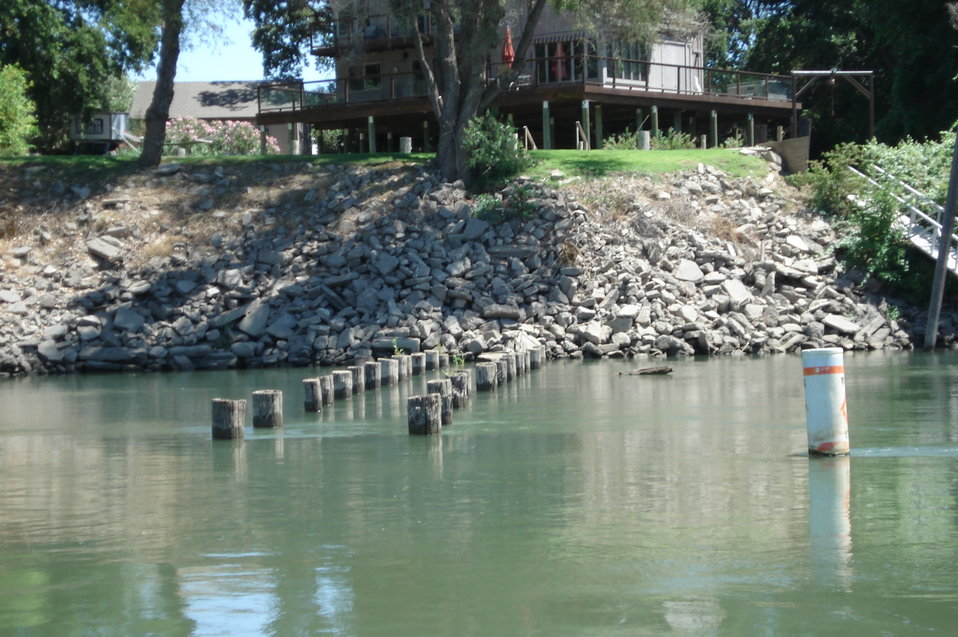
Sacramento River wing dam marked by buoy

A buoy marks the location of a wing dam (left) on the Sacramento River near West Sacramento, Calif., in July 2008. The U.S. Army Corps of Engineers Sacramento District’s Bryte Yard maintenance facility maintains 54 buoys on the Sacramento River as part of the Corps’ river navigation responsibility.